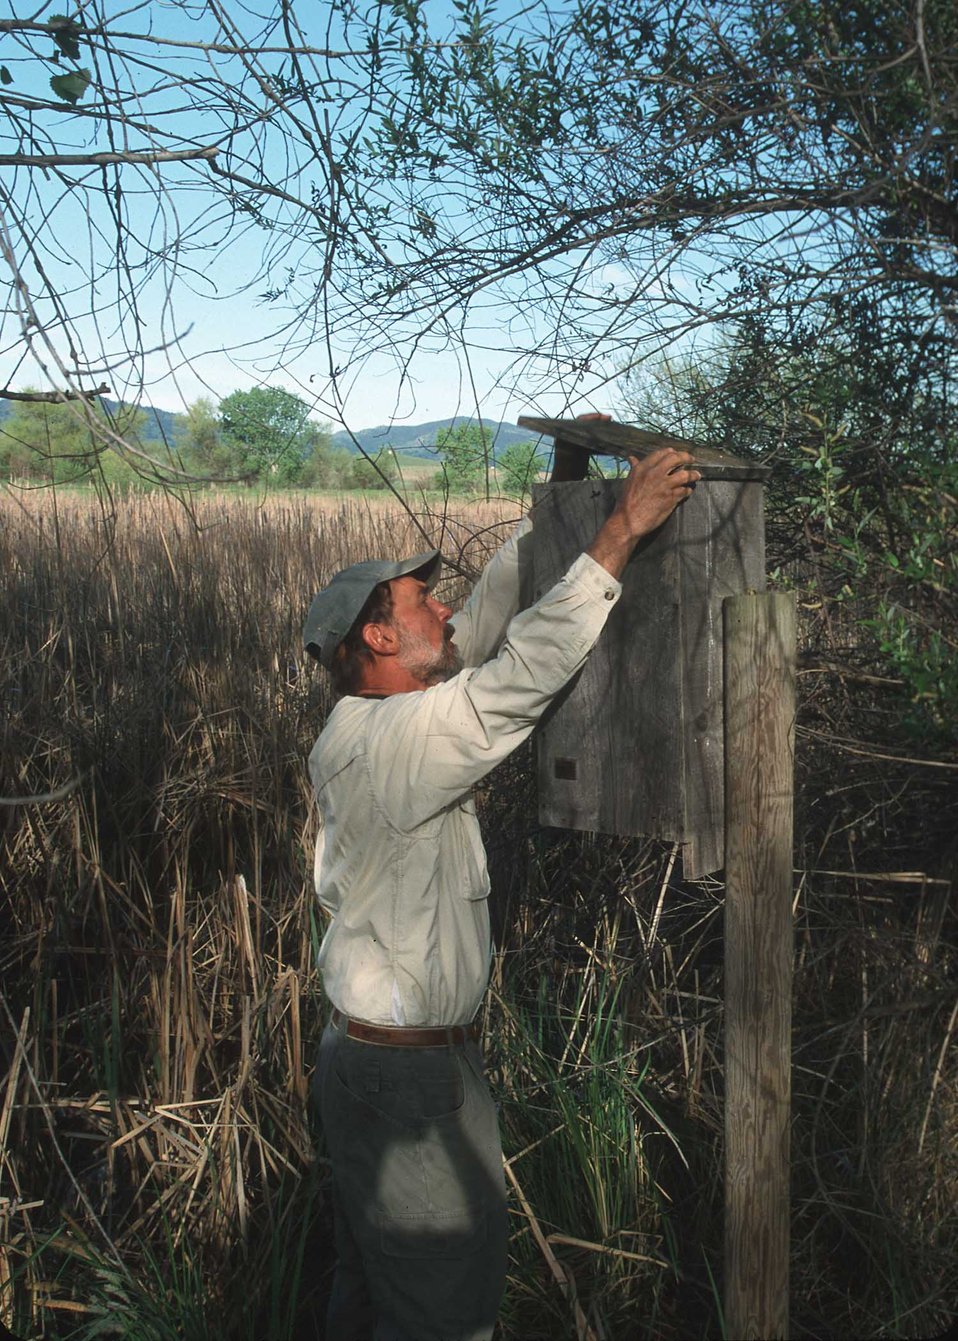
Yolo county farmer checks bird nest near restored wetland. Farmers provide valuable wildlife habitat as well as producing food and fiber.